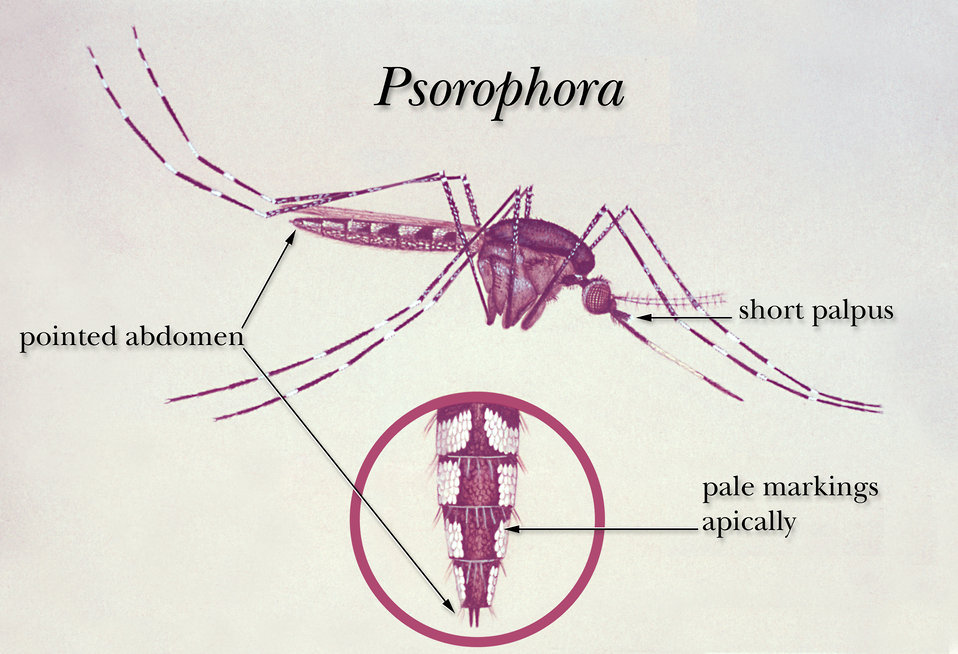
An illustration of a Psorophora mosquito.